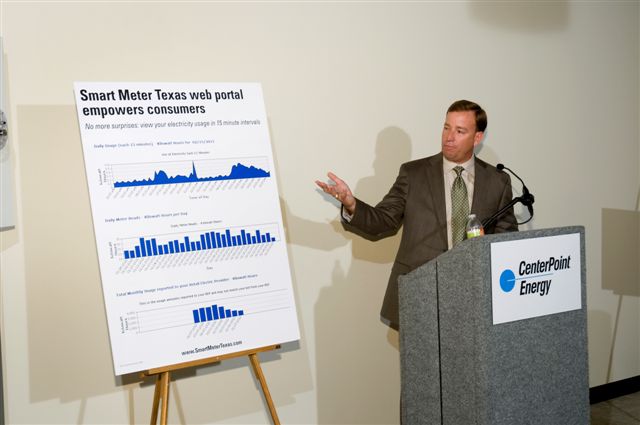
CenterPoint VP Kenny Mercado explains the web portal displaying customer data